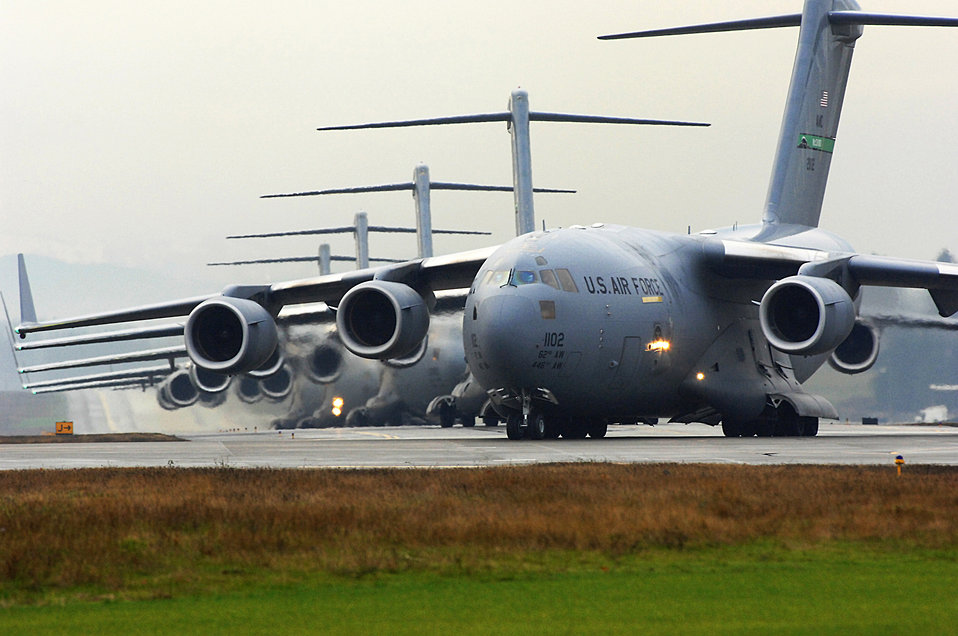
10 Globemaster IIIs fly in formation over Washington state

Several C-17 Globemaster III's sit on the flightline prior to being cleared for takeoff as part of a formation training exercise Dec. 20 from McChord Air Force Base, Wash. The exercise consisted of 10 aircraft and was designed to test all the organizations and different aspects of the mission that have to come together to facilitate launching, executing and recovering a large formation of C-17's in a short period of time.